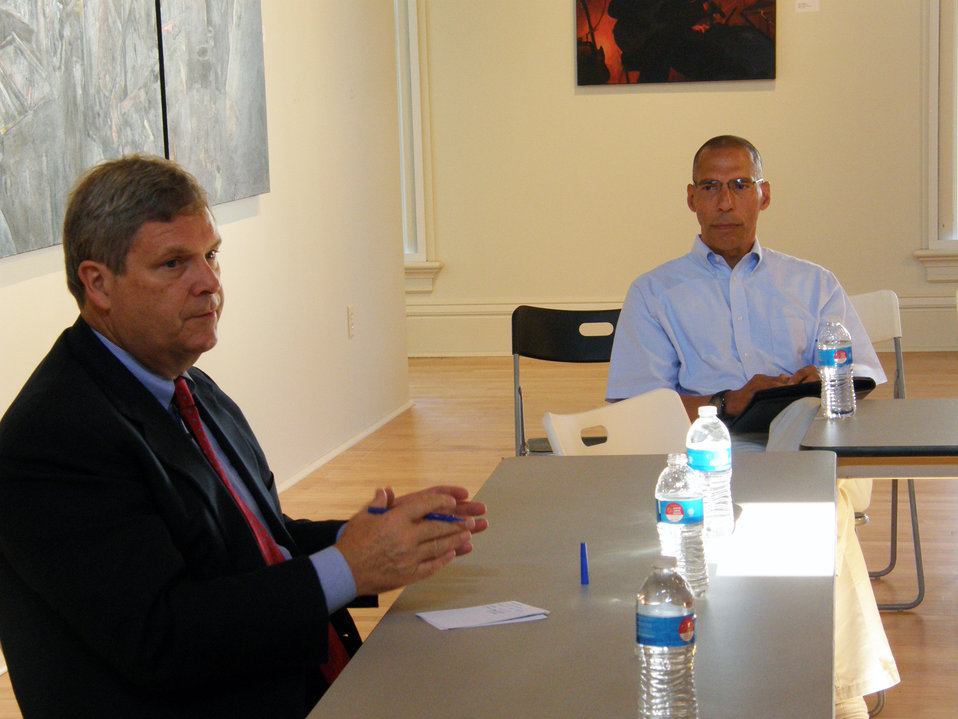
Agriculture Secretary Tom Vilsack responds to question as Cedar Rapids, IA, as housing advocate Dale Todd looks on. On Saturday, October 8, 2011.